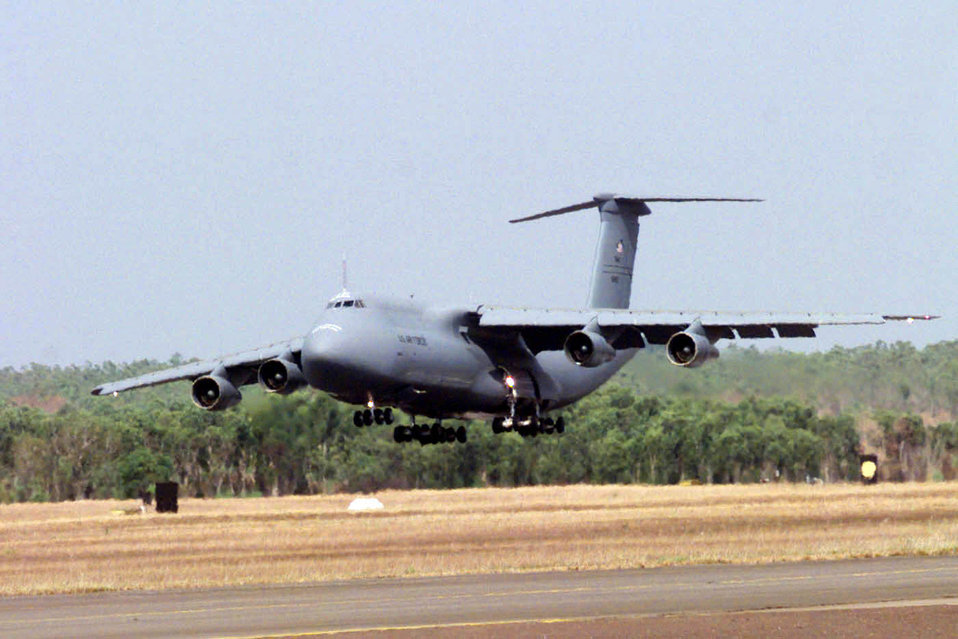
G'day, mate.

DARWIN ROYAL AUSTRALIAN AIR FORCE BASE, Australia -- A C-5 aircraft from the 9th Airlift Squadron, Dover Air Force Base, Del., lands here, to deliver cargo and equipment bound for East Timor to support Operation Stabilise. The Air Force is providing logistics, communications, and planning support to International Forces East Timor. INTERFET is providing peacekeeping, humanitarian assistance and force protection to East Timor.